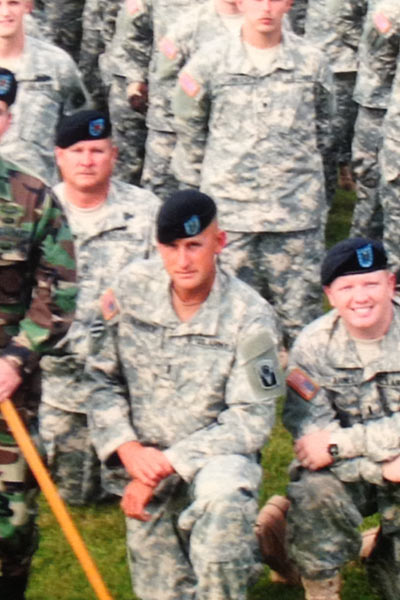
Andy Berrey-Southeast Region

Veteran Andy Berrey is a Federal Wildlife Officer at Okefenokee National Wildlife Refuge in Georgia.